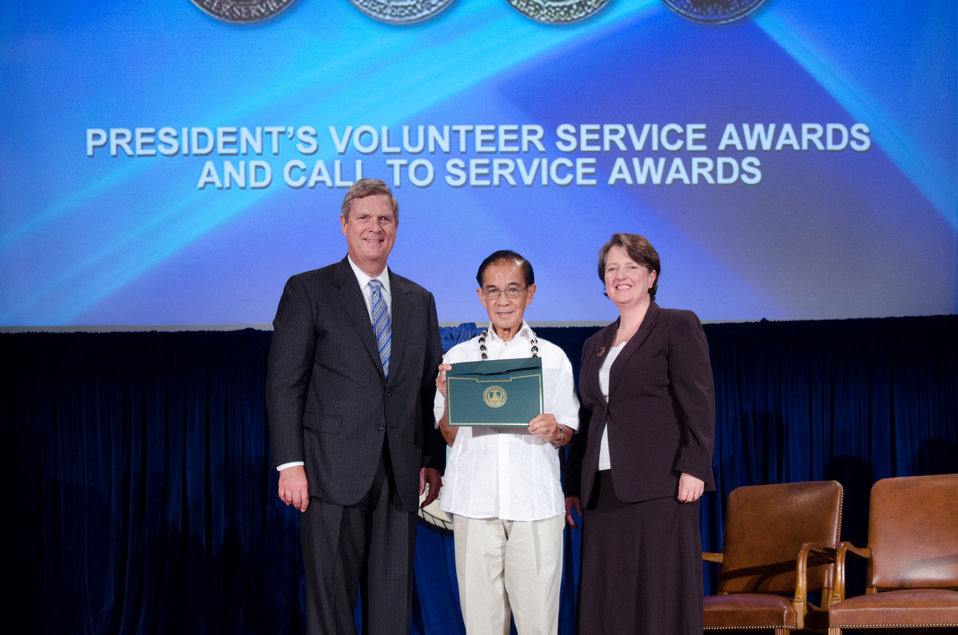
Agriculture Secretary Tom Vilsack (l) and Deputy Secretary Kathleen Merrigan (r), presents the President’s Volunteer Service Awards and Call to Service Award to Antonio Garcia , Animal and Plant Inspection Service. On Wednesday, September 14, 2011 in the Jefferson Auditorium at the US Department of Agriculture in Washington, DC.